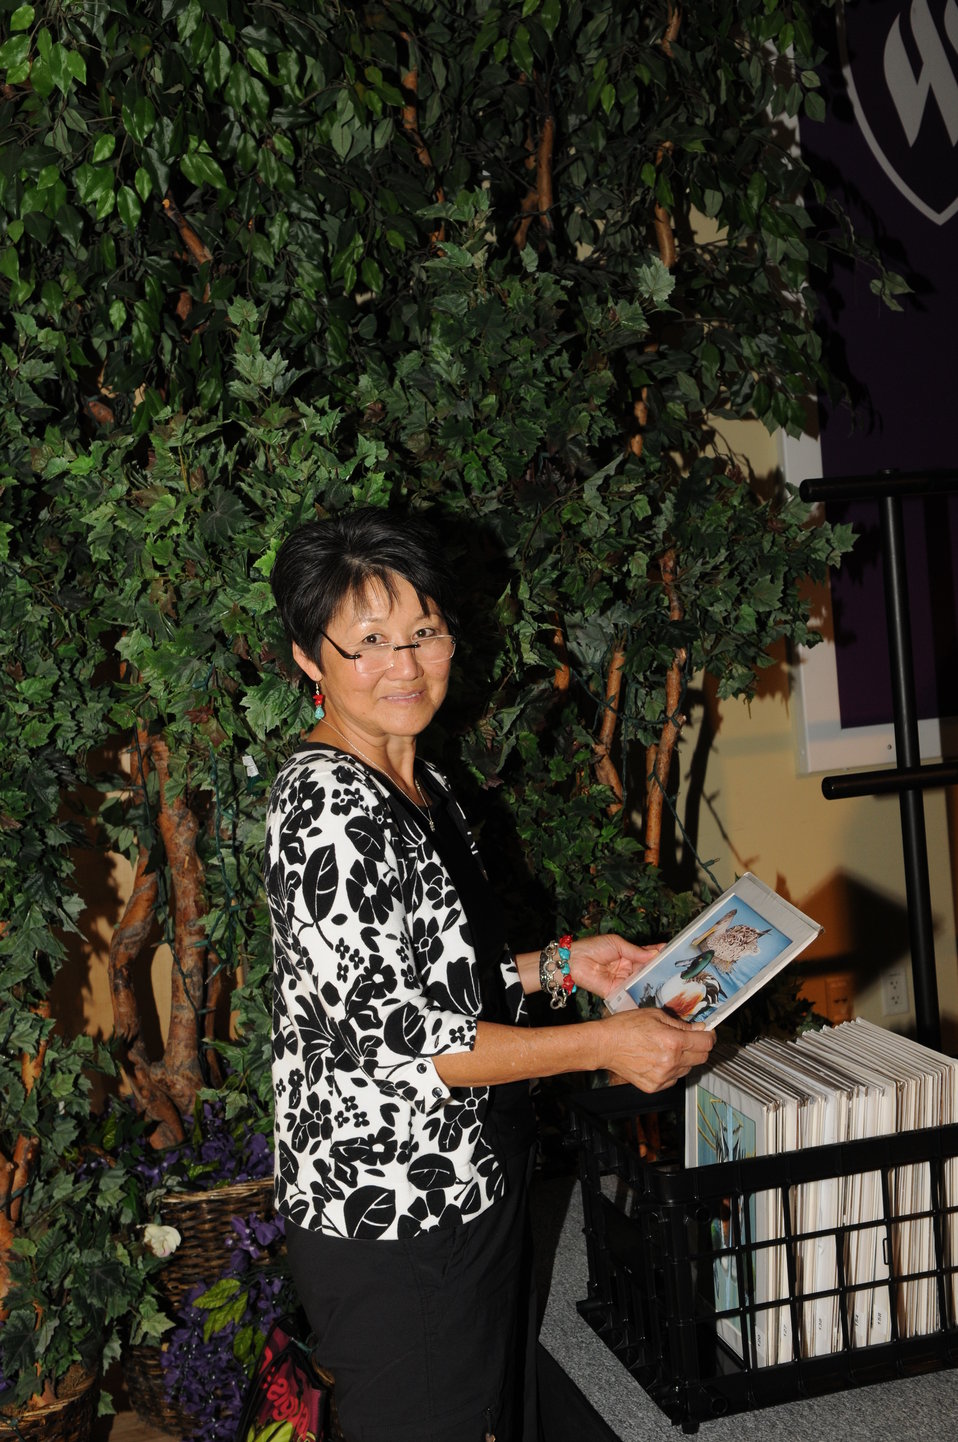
Artwork Presenter

The U.S. Fish & Wildlife Service sponsored the 2012 Federal Duck Stamp Art Contest September 28 and 29 in Ogden, Utah, at Weber State University. A panel of five judges was responsible for choosing the art work used to design the 2013-2014 Migratory Bird Hunting and Conservation Stamp.